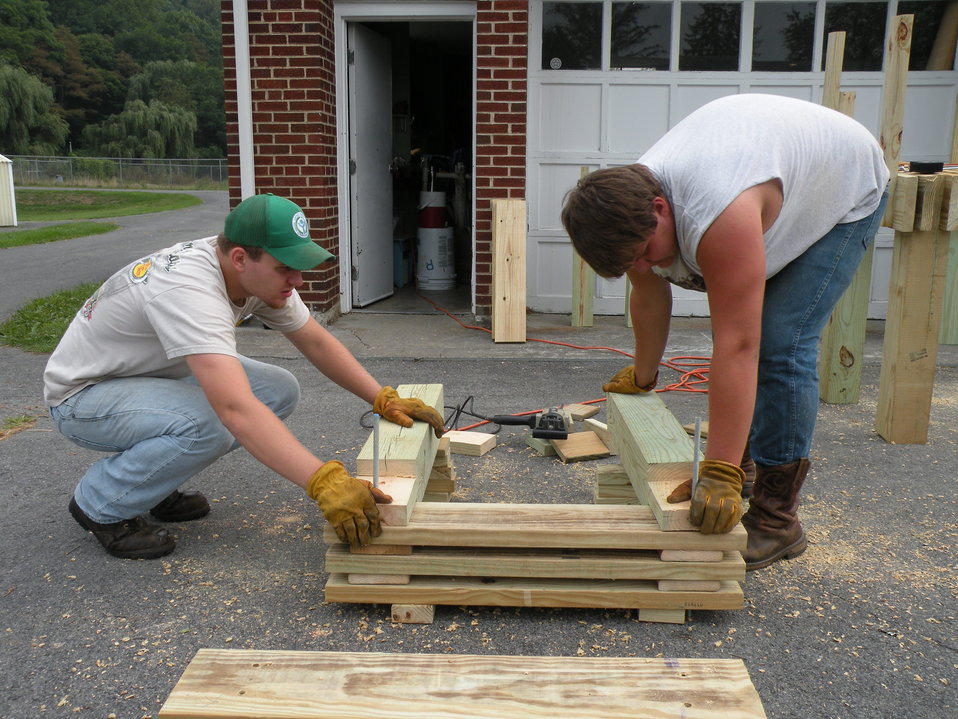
Building benches

YCC crew members build benches at White Sulfur Springs National Fish Hatchery.